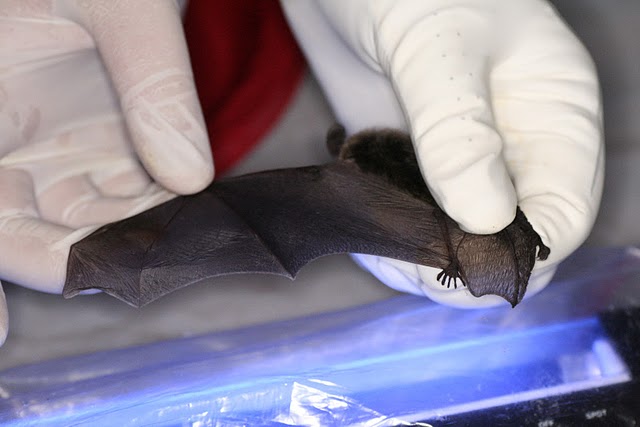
inspecting wing

inspecting bat's wing for damage